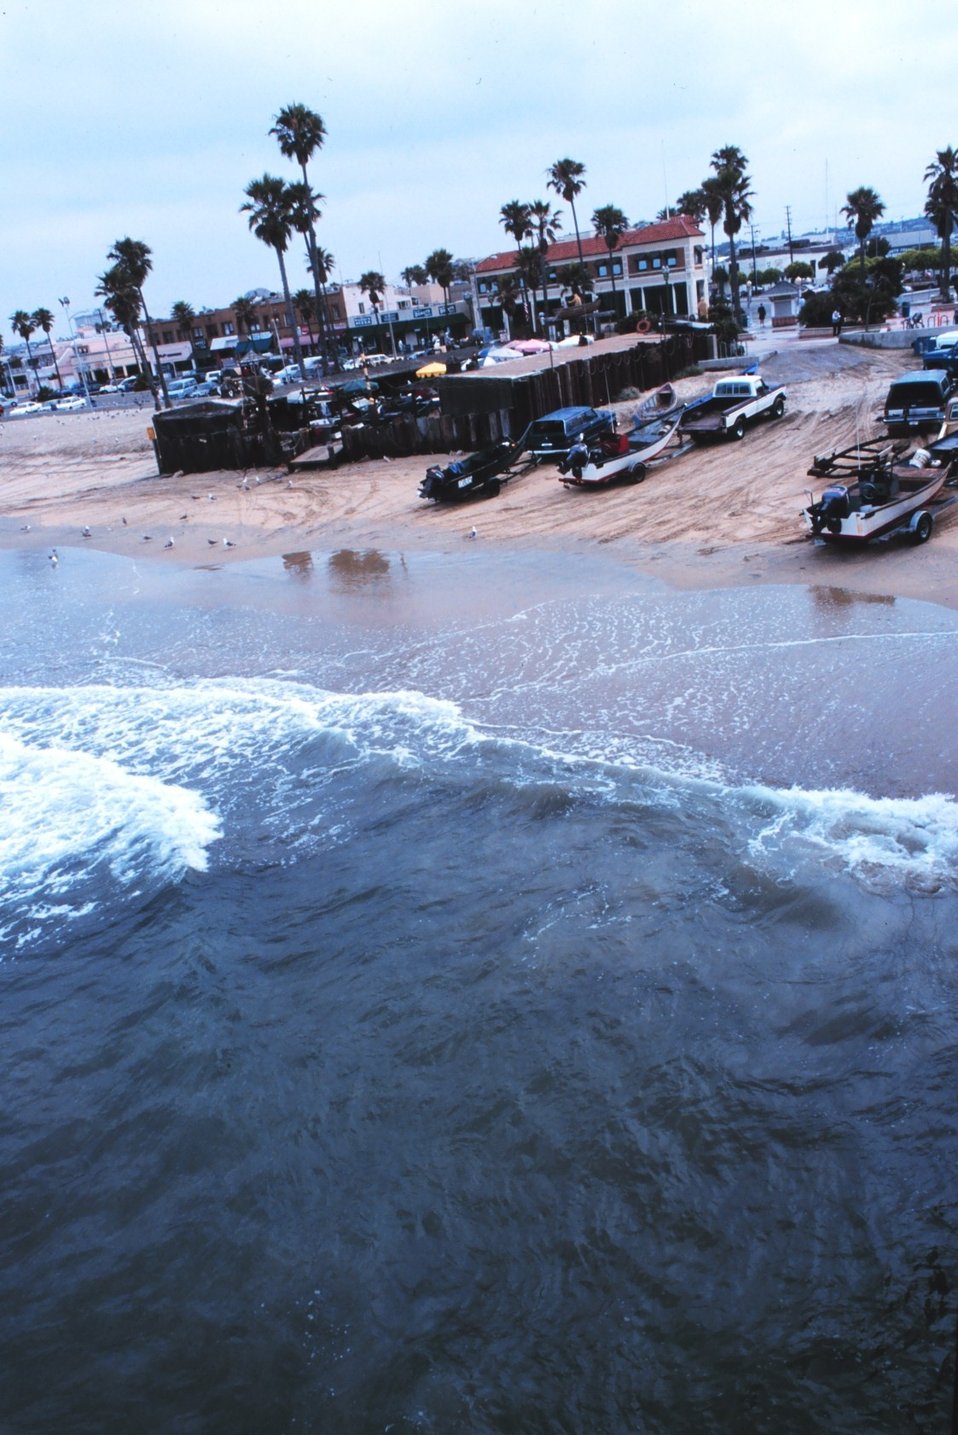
Views of the Dory Fleet Market